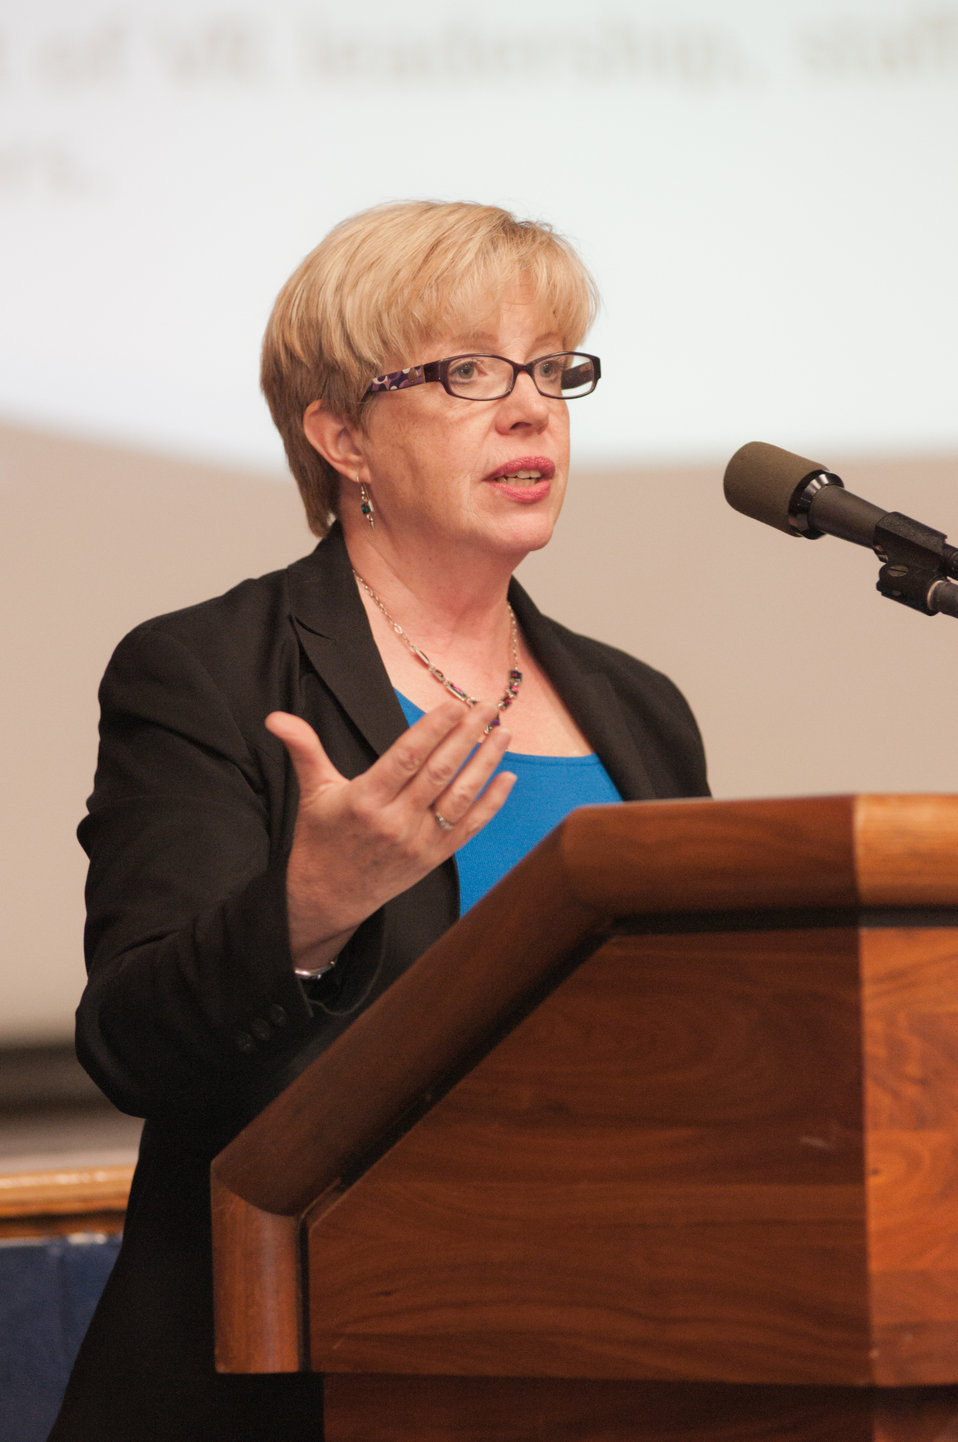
Council of State Administrator’s of Vocational Rehabilitation (CSAVR) Business Director Kathy West Evans discusses the CSAVR Memorandum of Understanding (MOU) and how it can help disability employment managers in the Federal government at the U.S. Department of Agriculture (USDA) Office of Human Resources Management (OHRM) Disability Employment Program Team Training at USDA in Washington, D.C. Tuesday, May 14, 2013.